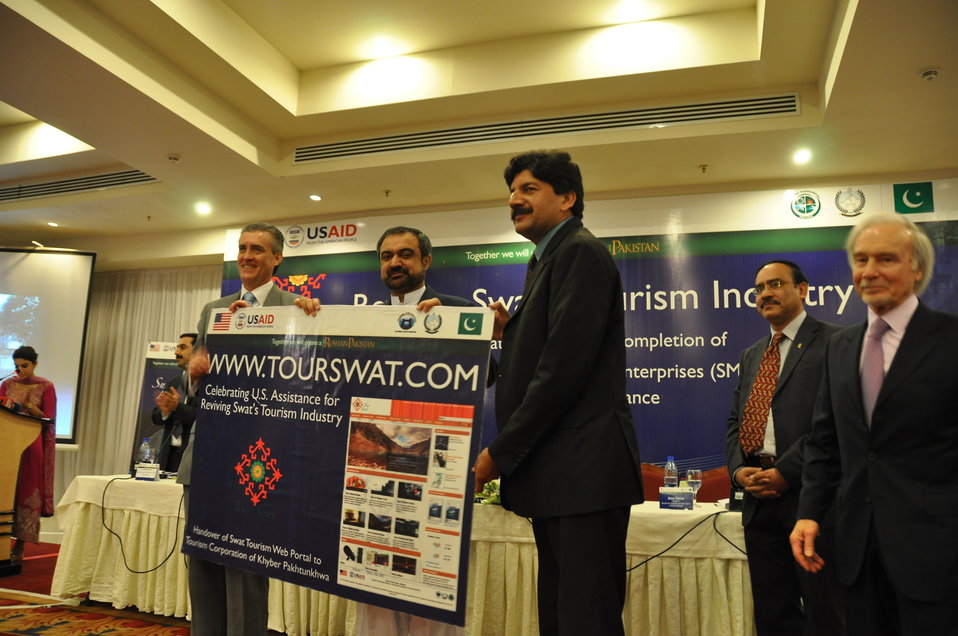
Graduation event of USAID Firms Project's Malakand Small and Medium Enterprises (SME) Recovery Assistance Program

To bring Swat back on map as safe and viable tourist destination, a dedicated tourism web portal: www.tourswat.com, was developed. In order to sustain this effort and garner more web traffic, this portal was handed over to Tourism Corporation of Khyber Pakthunkhwa